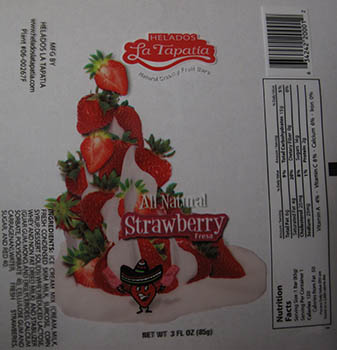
RECALLED – Ice cream products

March 19, 2014 – Product Recall – Helados La Tapatia, Inc. Recalls Products Because of Possible Health Risk.